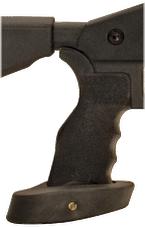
Picture of my 100 BA grip